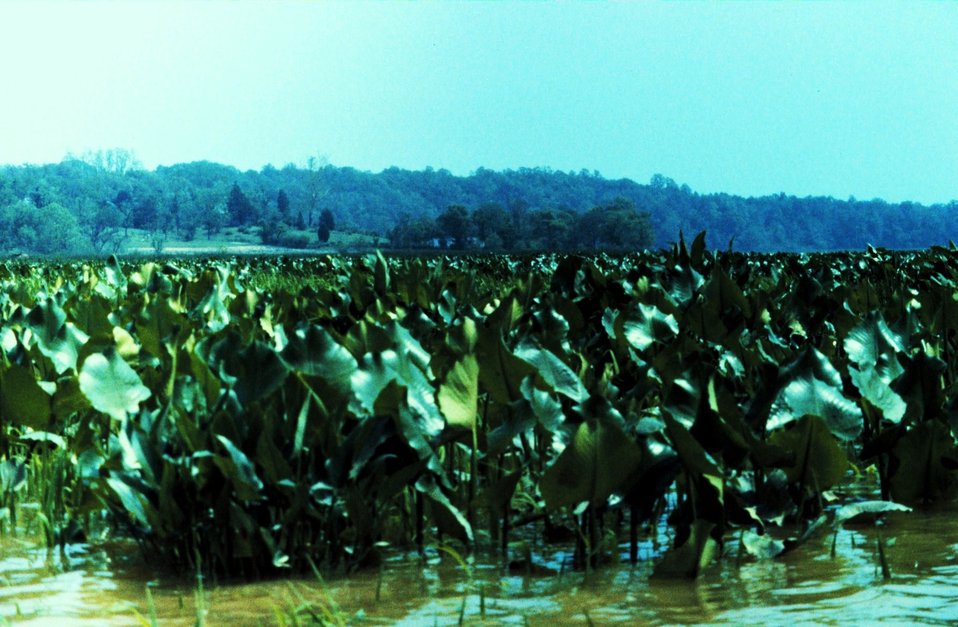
Pickerel weed (Pondeteria cordata) marsh in the Patuxent River. Found in freshwater tidal marshes, it is a source of food for deer.